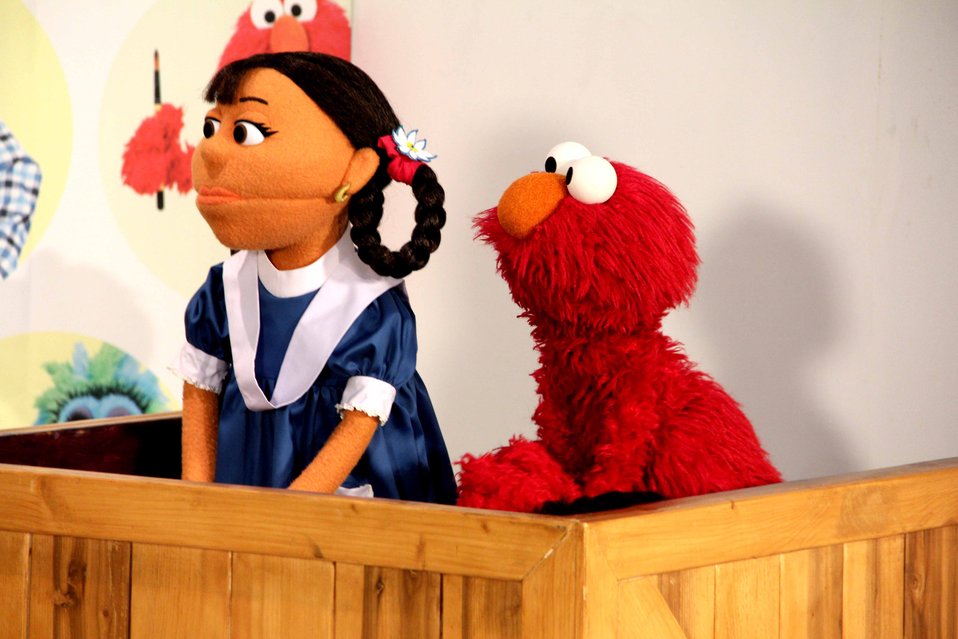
U.S. Ambassador’s Visit to Sim Sim Hamara Highlights U.S. Commitment to Improved Children’s Education in Pakistan at Lahore on 28 April, 2012

U.S. Ambassador Cameron Munter, his wife Dr. Marilyn Wyatt, and Consul General Nina Fite visited the Sim Sim Hamara set at Pakistan Children’s Television (PCTV) today to reaffirm the U.S. government’s commitment to children’s education in Pakistan. Sim Sim Hamara is a U.S. Government-funded joint project between Rafi Peer Theatre Workshop and Sesame Street Workshop New York. Along with language and numeracy skills, the educational program promotes basic life skills, healthy habits, mutual respect and understanding, and a lifelong love for learning. Topics on Sim Sim Hamara have included the importance of society, self-belief, respect for elders, and inter-provincial harmony to promote tolerance and respect for different cultures and languages